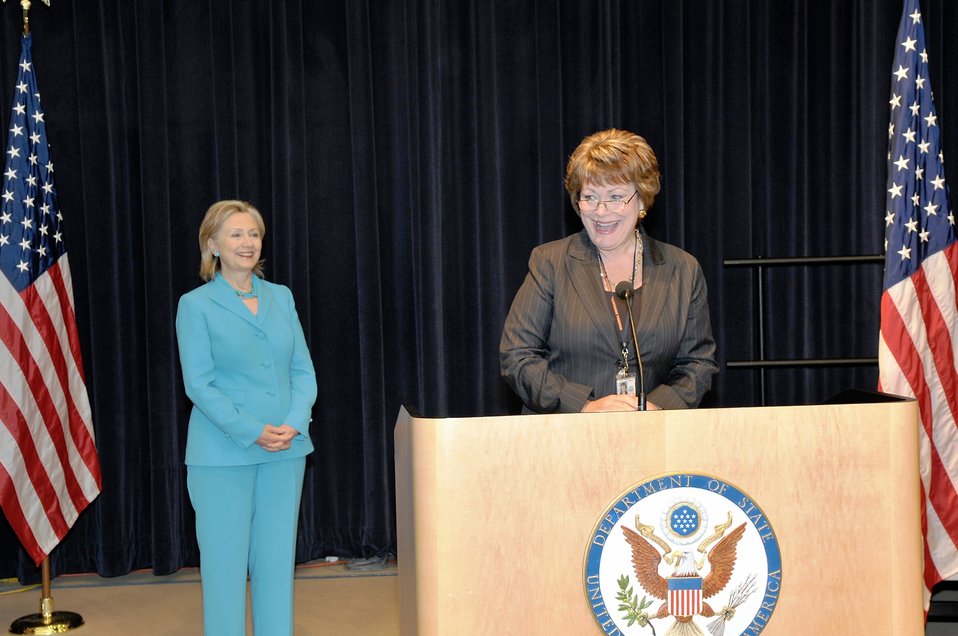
Under Secretary Tauscher Addresses the Department of State Staff as Secretary Clinton Looks On

U.S. Under Secretary of State for Arms Control and International Security Ellen Tauscher addresses members of the U.S. delegation to the New START negotiations and U.S. Department of State staff involved in the Nuclear Posture Review as U.S. Secretary of State Hillary Rodham Clinton looks on, at the U.S. Department of State in Washington, D.C., on July 13, 2010.